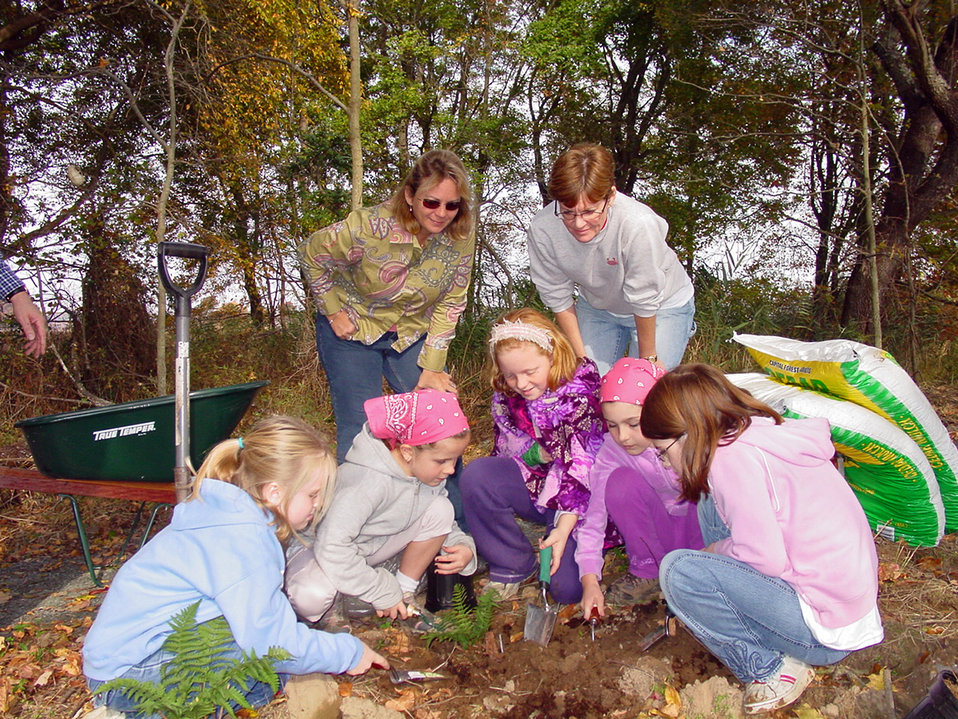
Connecting children with nature

Bombay Hook National Wildlife Refuge, DE.